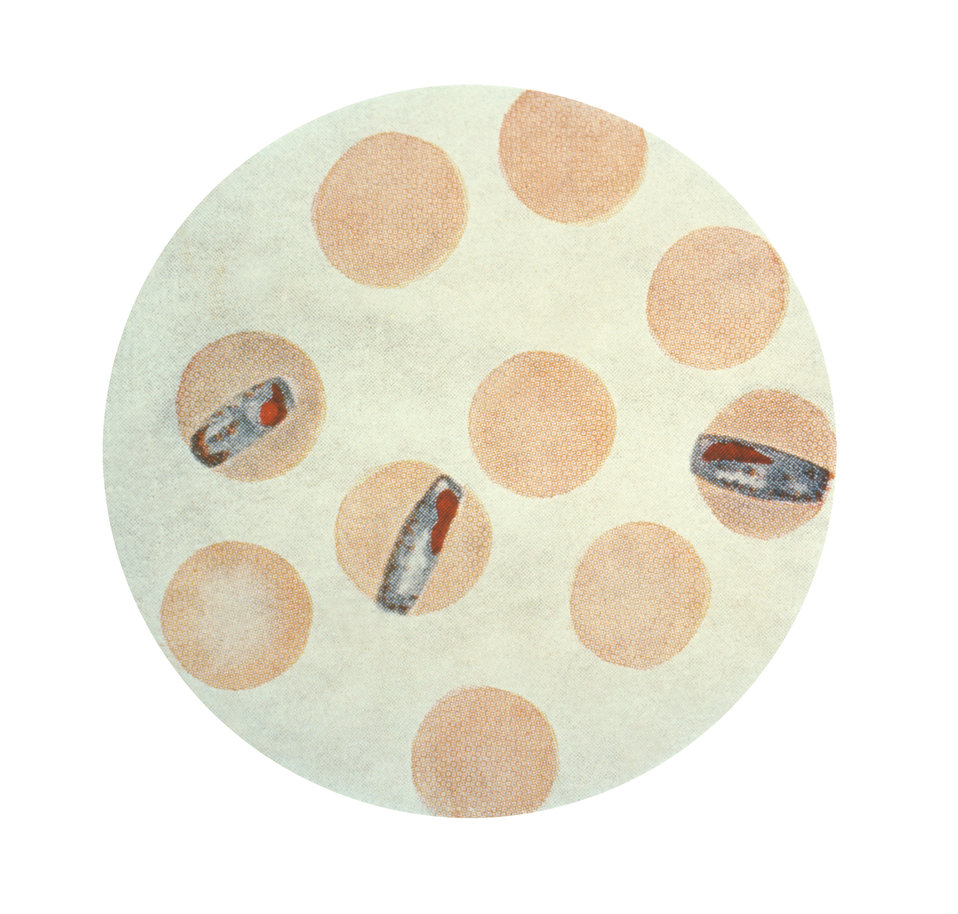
This illustration depicts Plasmodium malariae in its erythrocytic schizont stage using Wright's stain; Magnified x1500.